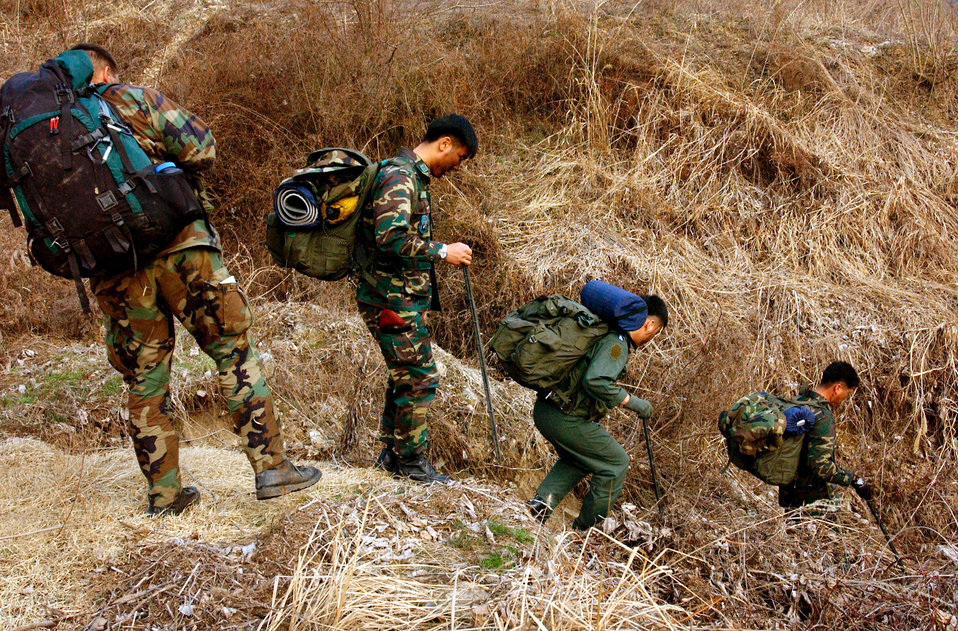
Mountain classes

OSAN AIR BASE, South Korea -- Korean troops and Air Force members hike through mountains on March 25 as part of a survival, evasion, resistance and escape exercise during Foal Eagle. Air Force instructors are training Republic of Korea air force members to navigate and guide Air Force rescue units to their location during the exercise.